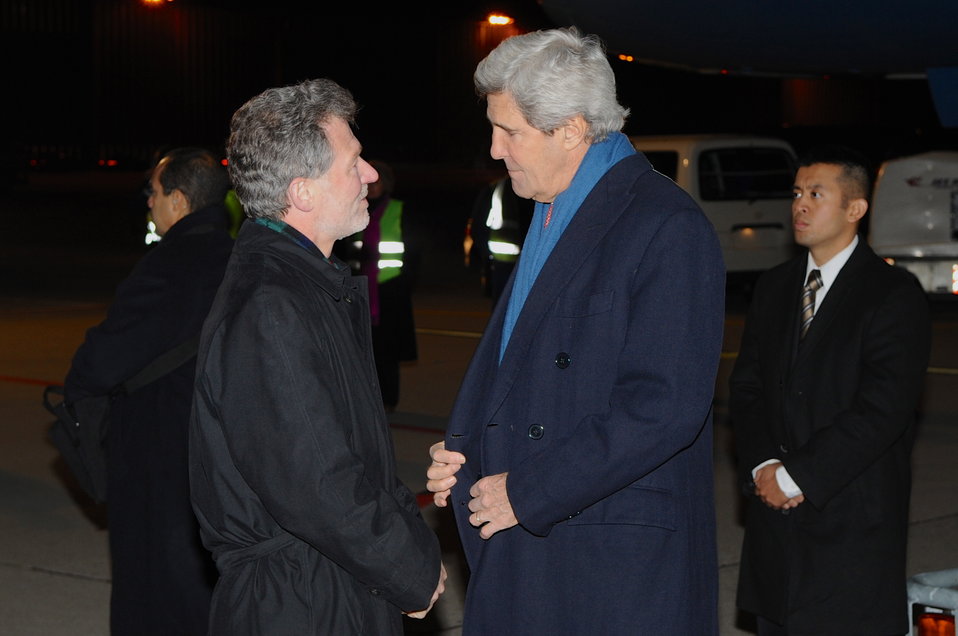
Secretary Kerry Arrives in Switzerland Ahead of Montreux, Davos Visits

U.S. Secretary of State John Kerry is greeted by Charge d' Affaires of the U.S. Permanent Mission to the United Nations in Geneva Peter Mulrean as he arrives in Geneva, Switzerland, on January 21, 2014, ahead of visits to Montreux for a Syria peace conference and Davos for a speech to the World Economic Forum.